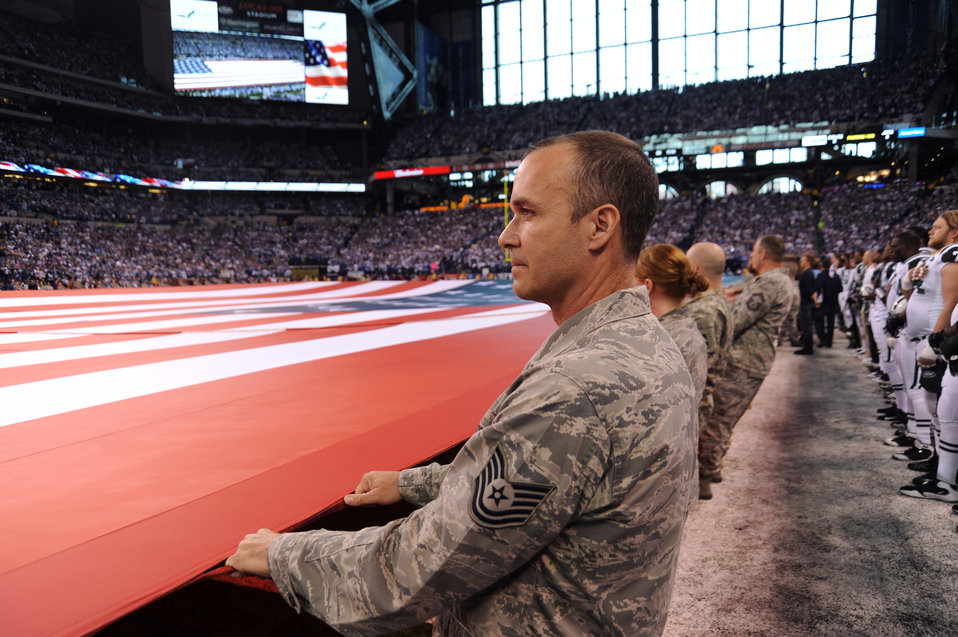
Airmen honor the colors before NFL's AFC Championship Game

Servicemembers from the Indiana National Guard hold the colors during the national anthem of the NFL's American Football Conference Championship Game between the New York Jets and the Indianapolis Colts. The Colts won the game 30-17 and will face the New Orleans Saints in the Super Bowl Feb. 7, 2010 in Miami.